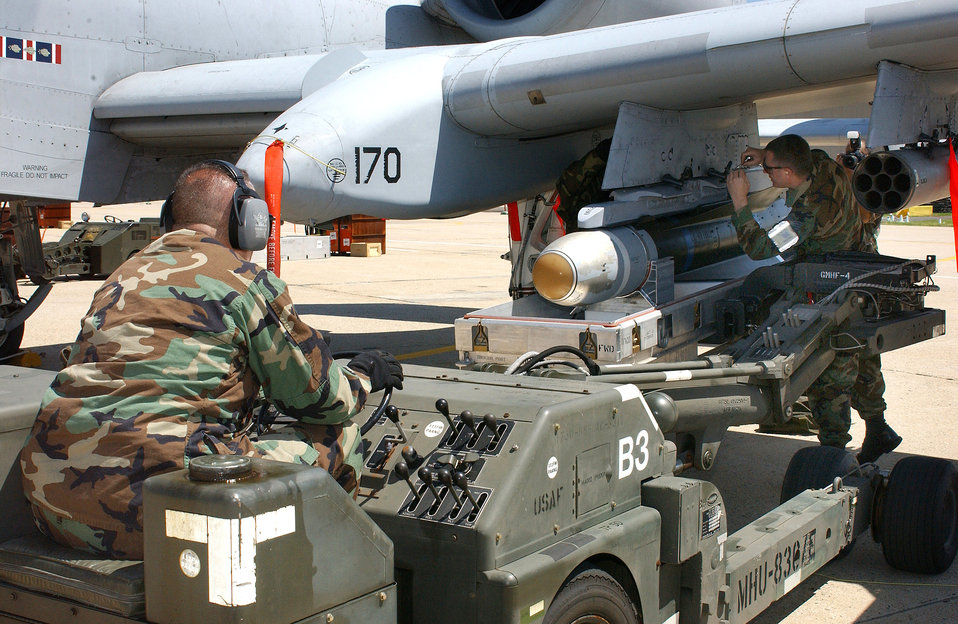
Operation ready

Tech. Sgts. Bruce Hart (left) and Scott Edsell secure an AGM 65 Maverick missile to an A-10 Thunderbolt II during the first phase of an operational readiness inspection at Willow Grove Air Reserve Station, Pa., on Saturday, April 29, 2006. Sergeants Hart and Edsell are with the Pennsylvania Air National Guard's 111th Maintenance Squadron.